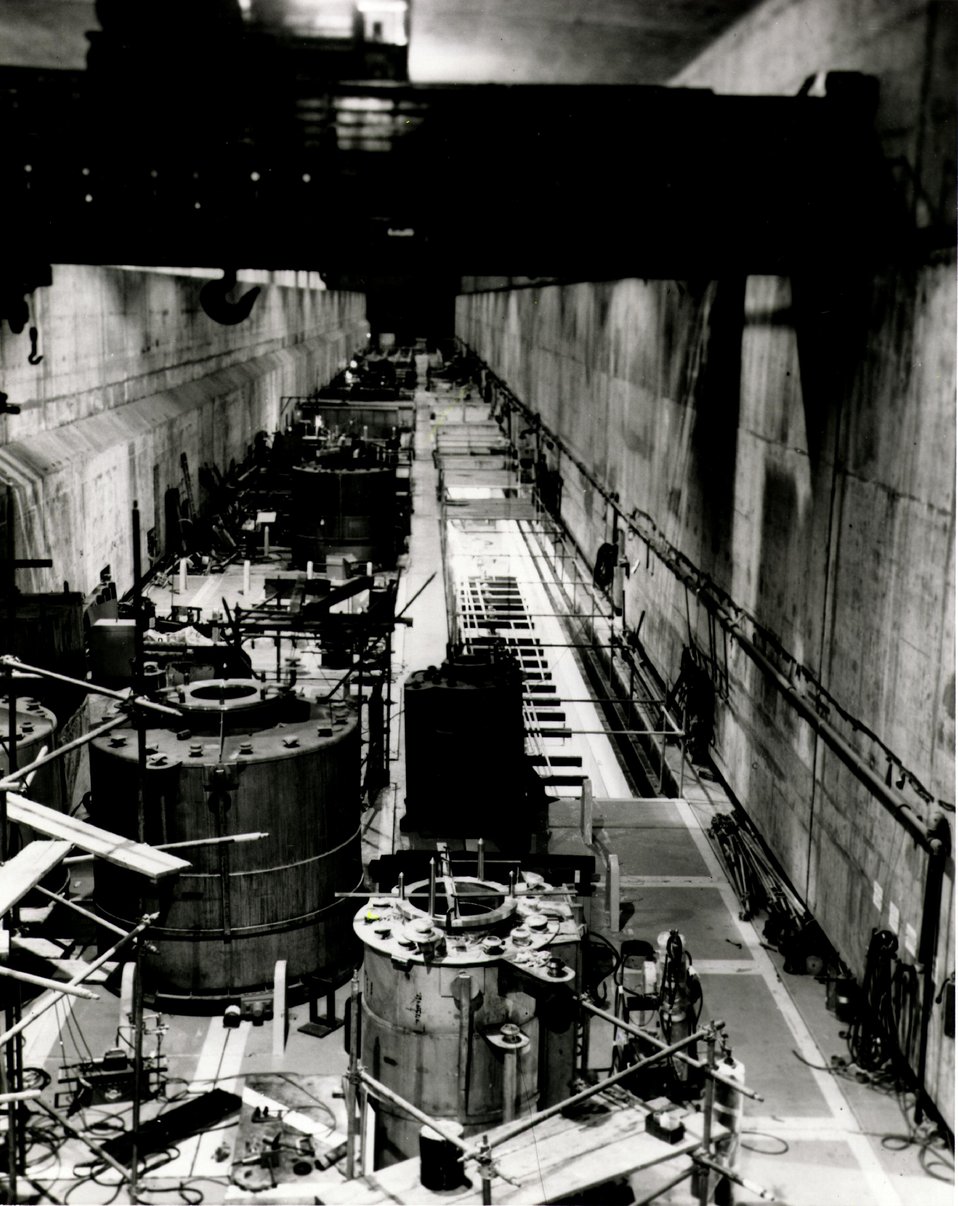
Interior of the canyon portion of the B-Plant, a former nuclear fuel chemical reprocessing facility which was recently converted to process radioactive liquid waste. Concrete walls up to nine feet thick provide shielding from radioactivity. Circa 1970.